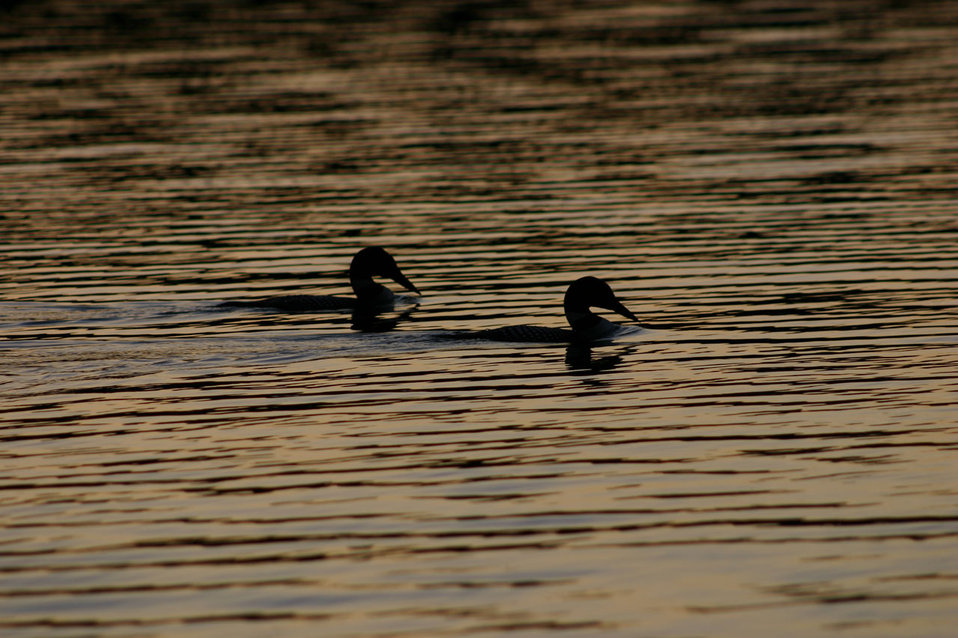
Loons on a lake, evening.